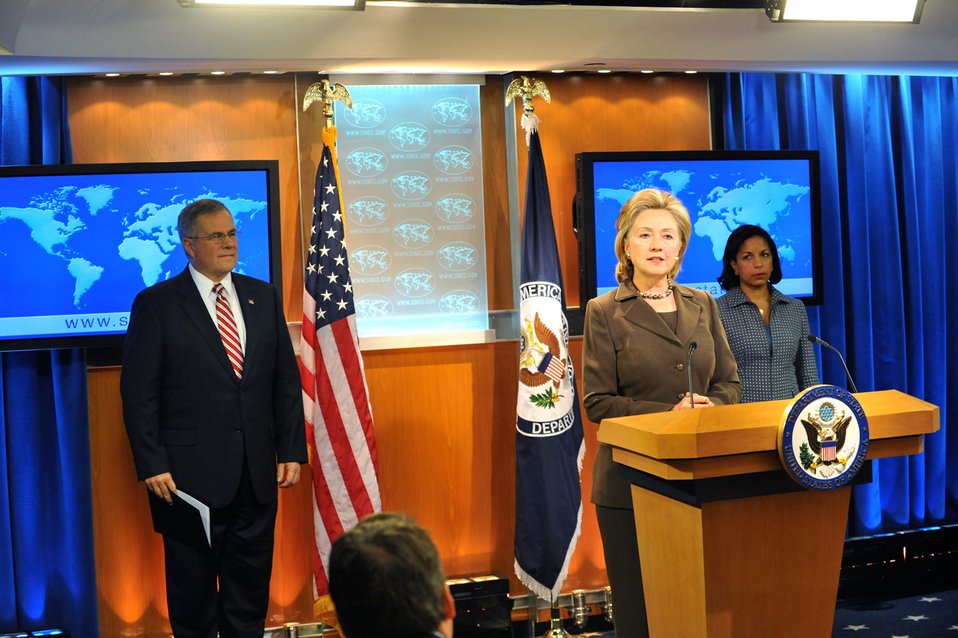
Secretary Clinton Unveils New Policy Toward Sudan

U.S. Secretary of State Hillary Rodham Clinton unveils the new comprehensive policy toward Sudan at the U.S. Department of State, Washington, D.C., March 19, 2009.